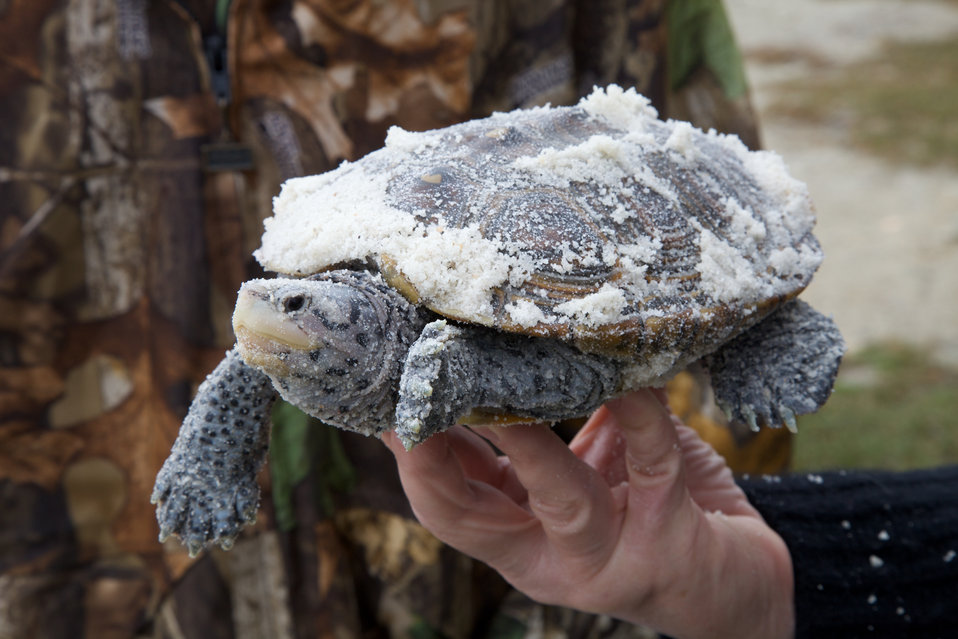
Diamondback Terrapin under the care of the Terrapin Institute located on the Eastern Shore of Maryland.